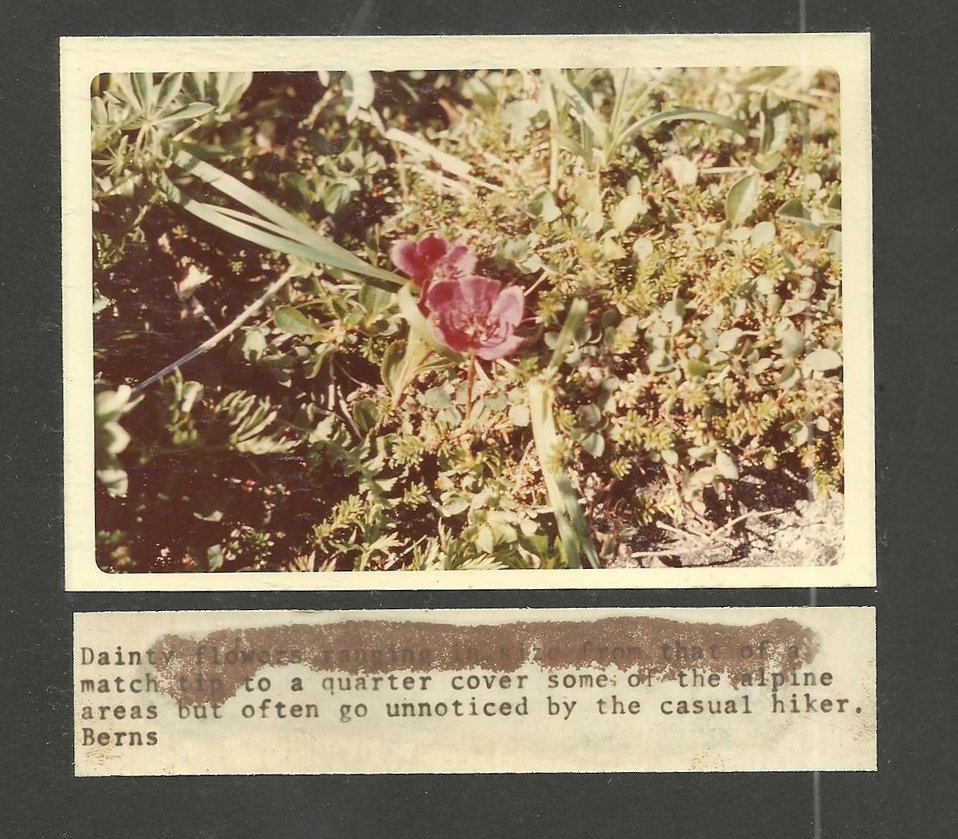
(1970) Alpine Wildflower

Credit: USFWS

Source and Contact: Kodiak National Wildlife Refuge